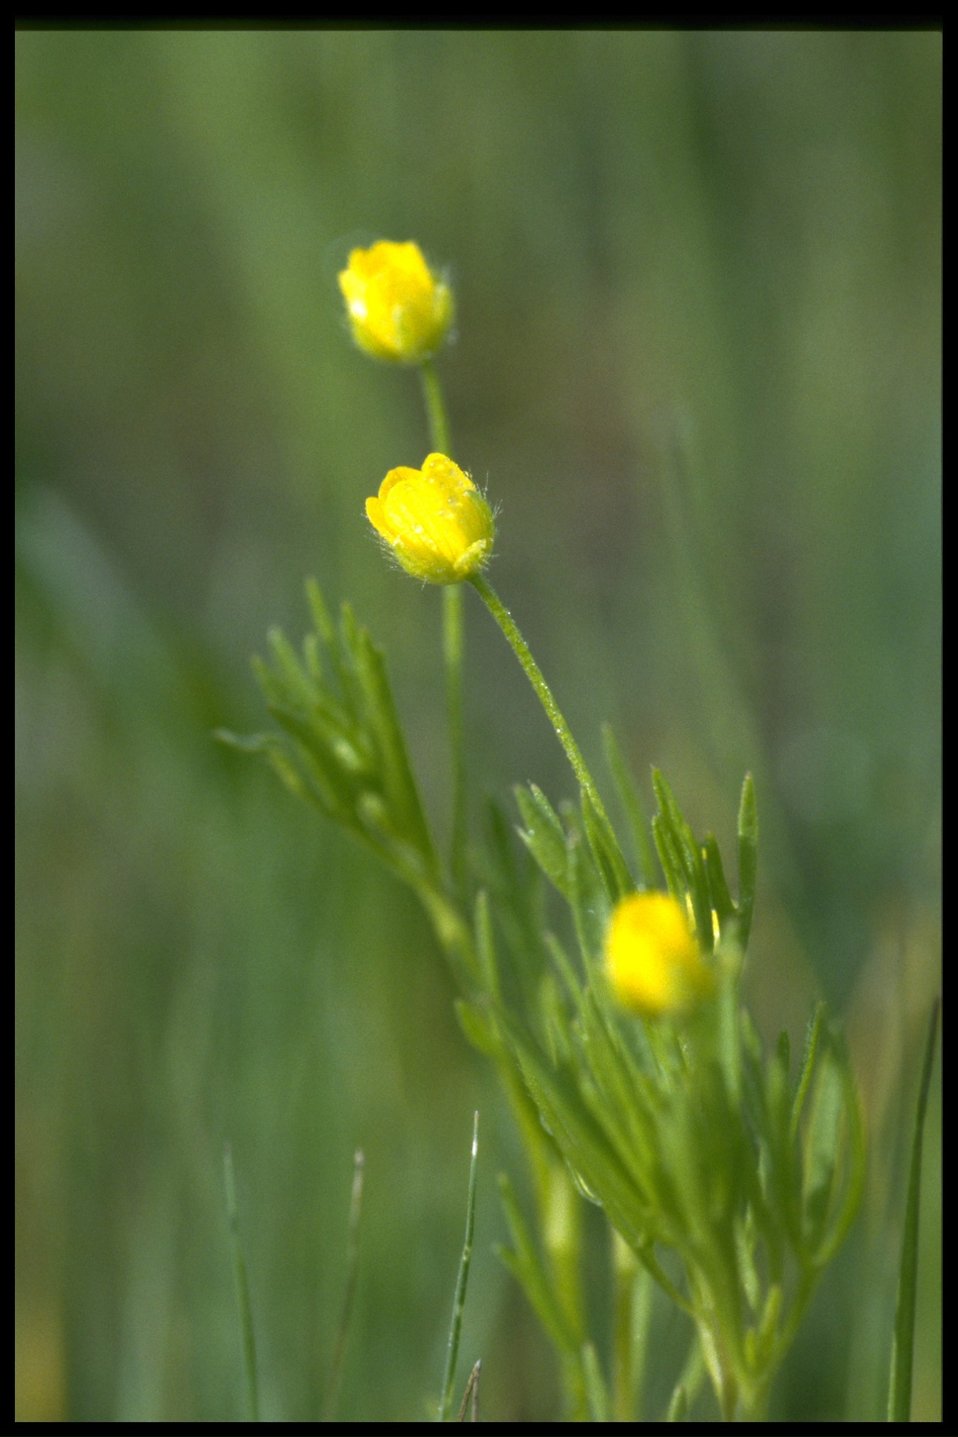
Closeup shot of Ranunculus sp.